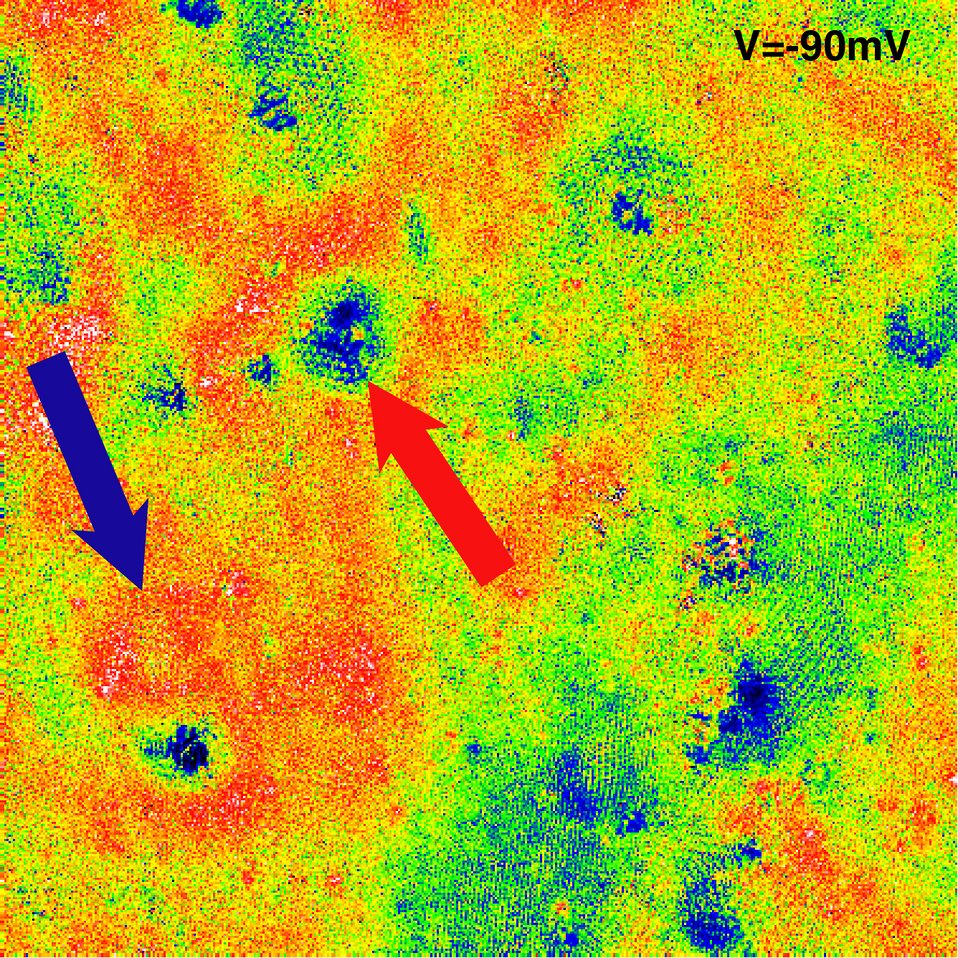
Speed Bumps Less Important Than Potholes for Graphene

Comparison of an STM topographic image of a section of graphene sheet (top left) with spectroscopy images of electron interference at three different energies shows strong interference patterns generated by atomic scale defects in the graphene crystal (red arrows) but only modest disturbances caused by larger scale bumps in the sheet (blue arrows.) Analysis of the ripples shows that the electron energy in graphene is inversely proportional to its wavelength, just like light waves. The area imaged is approximately 40 nanometers square.